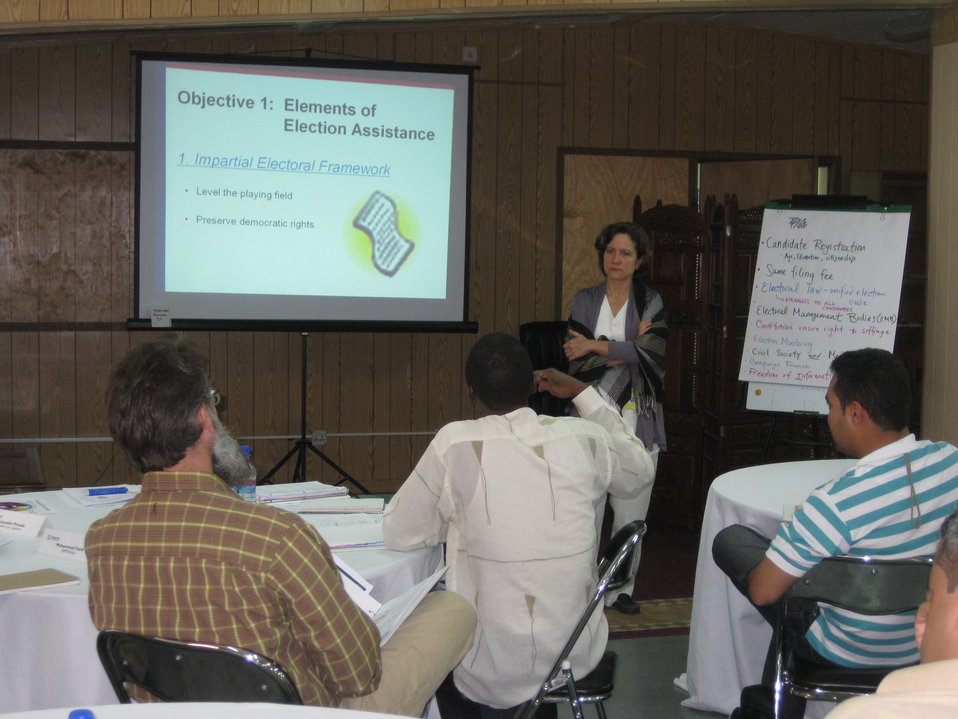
Afghan Youth Voices 039